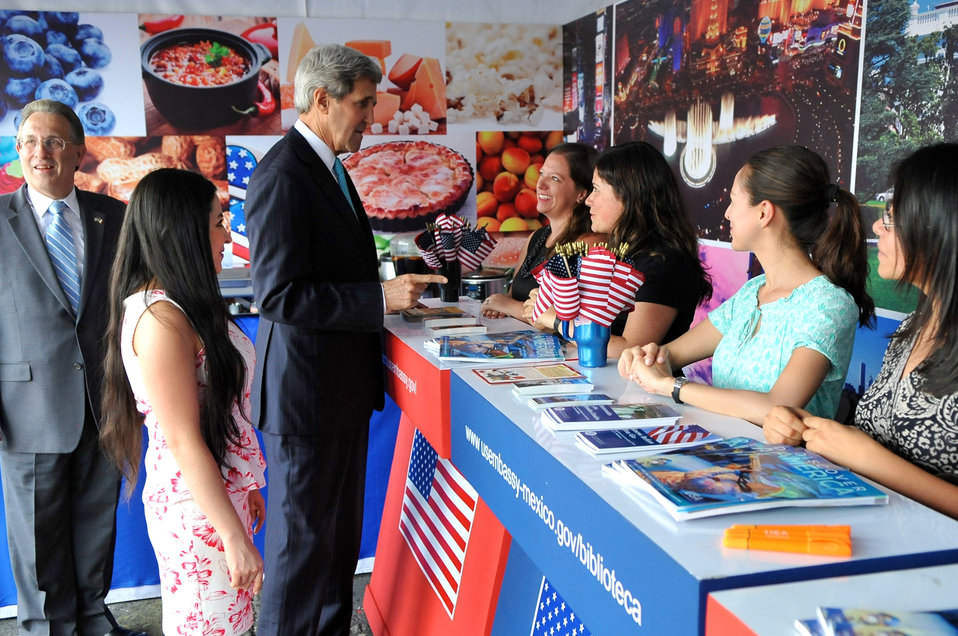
Secretary Kerry Chats With Staffers at American Cultural Booth in Zocalo Plaza

U.S. Secretary of State John Kerry chats with staffers at an American cultural booth at the Feria de last Culturas Amigas in Zocalo Plaza, Mexico City, Mexico on May 21, 2014.